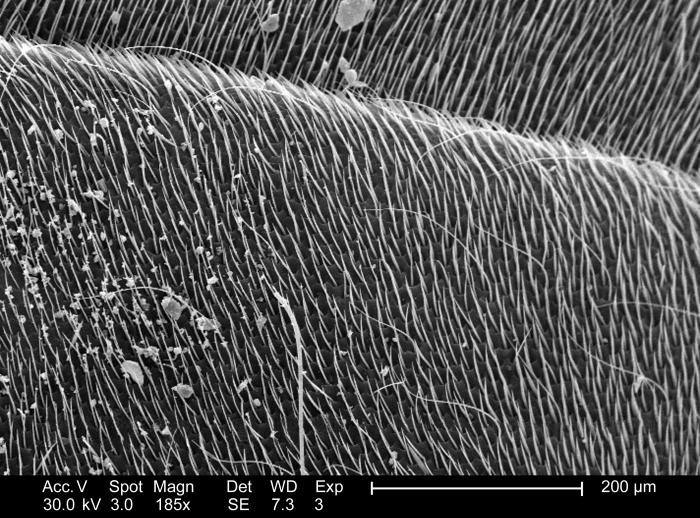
This scanning electron micrograph (SEM) depicted the magnified surface of a Western honeybee's, Apis mellifera, exoskeletal surface, revealing the multitude of small setae, or sensorial hairs invisible to the unaided eye. These setae detect changes in wind speed and direction, as well as thermal and chemical differences in the bee's environment, and are integral in the insect's pollen collecting activities; Magnified 185x.